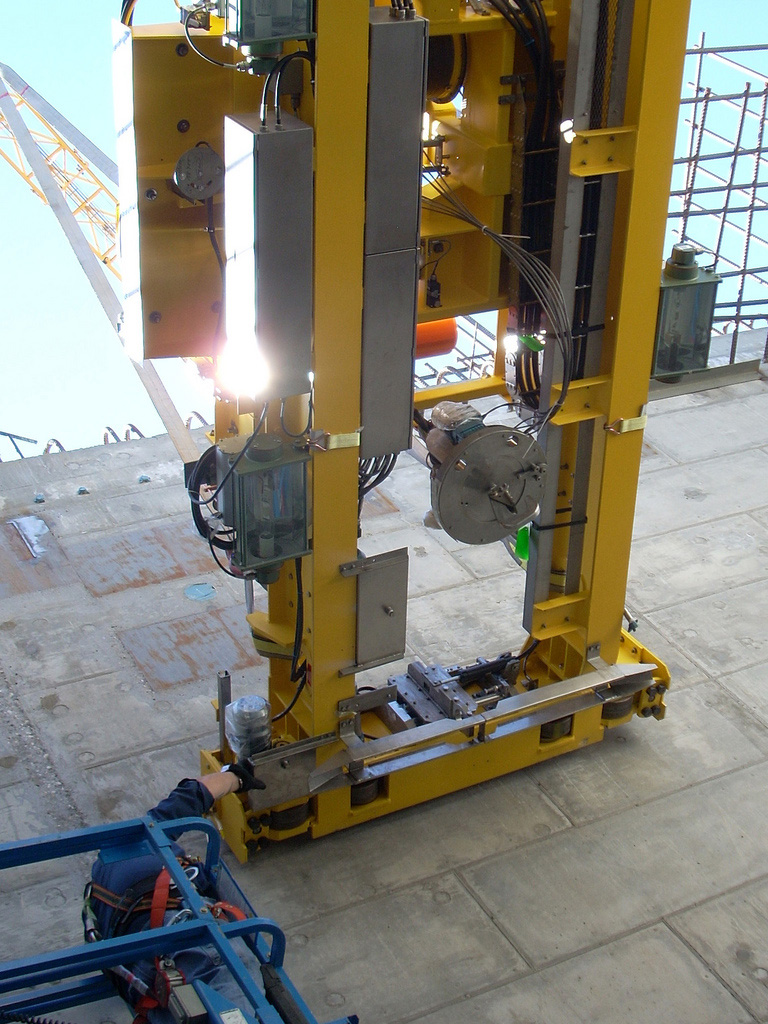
Hanford Waste Treatment Plant receives and sets key bridge crane in High-Level Waste Facility

Crews at the Vit Plant recently installed a three-ton-capacity bridge crane that measures approximately 16 feet long, 9 feet wide and 4 feet tall. It will be used to handle 55-gallon carbon-steel drums before and after they are filled with residual solid waste.